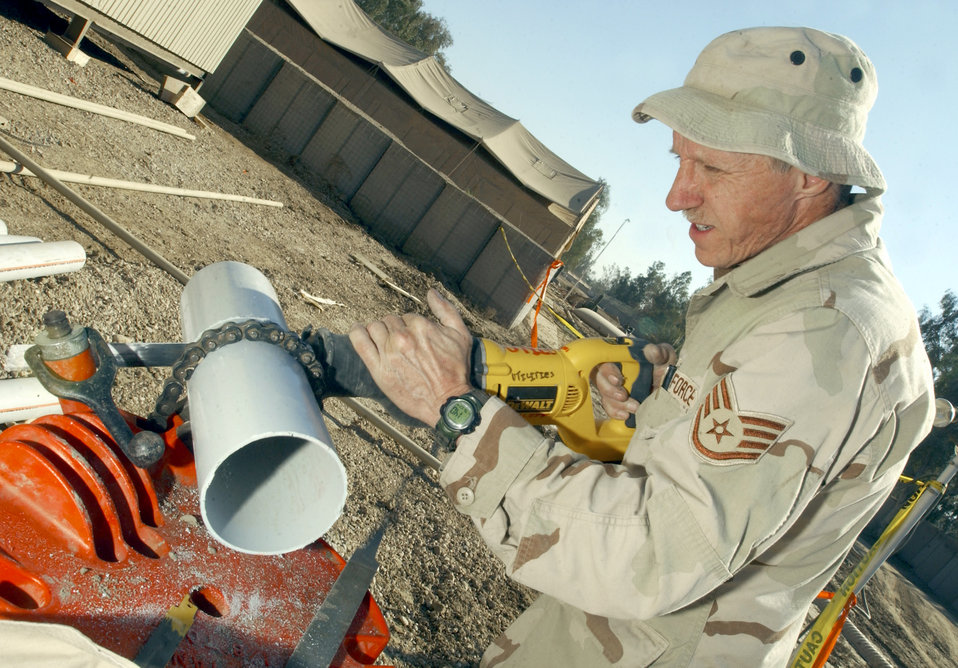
Cadillac man

BAGHDAD INTERNATIONAL AIRPORT, Iraq -- Staff Sgt. Patrick Lodgson resizes pipes to install